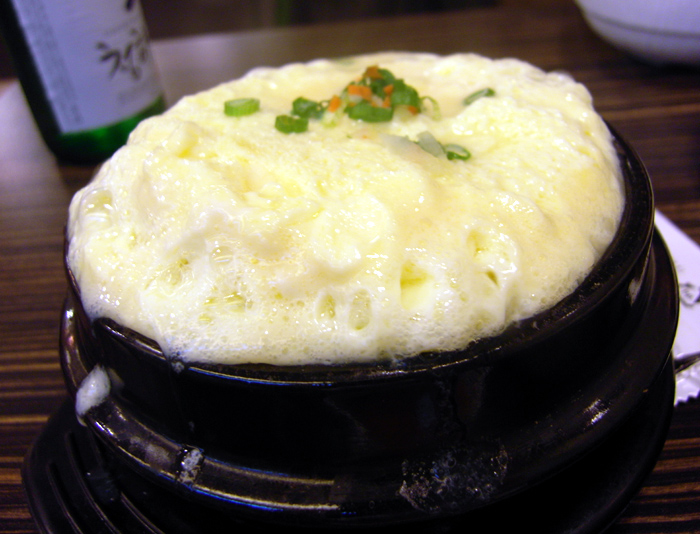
Gyeran jjim in hot pot